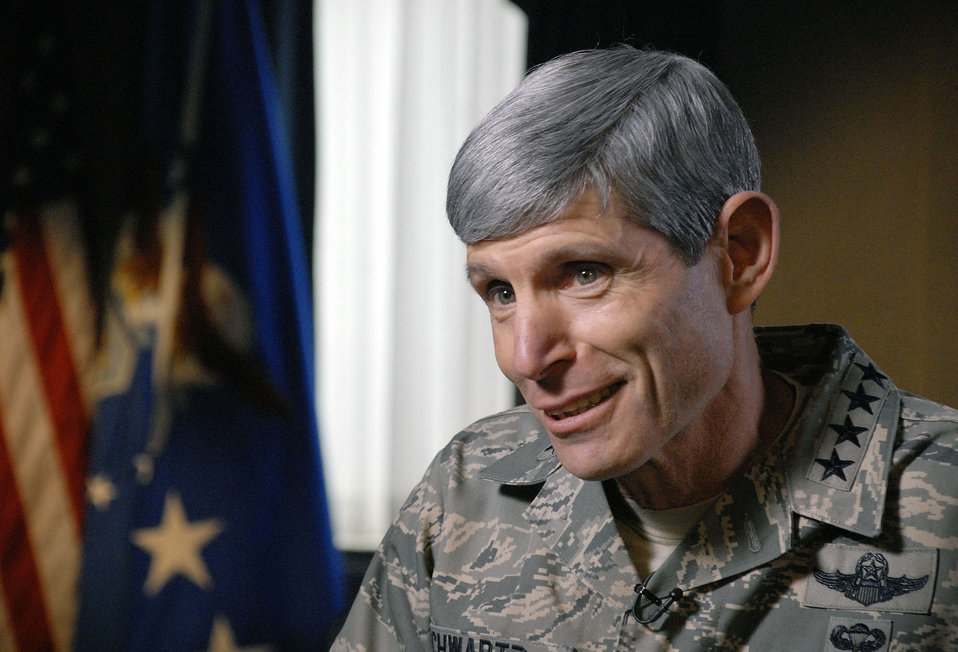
General Schwartz on '60 Minutes'

Air Force Chief of Staff Gen. Norton Schwartz answers questions during an interview April 15 with Lara Logan from